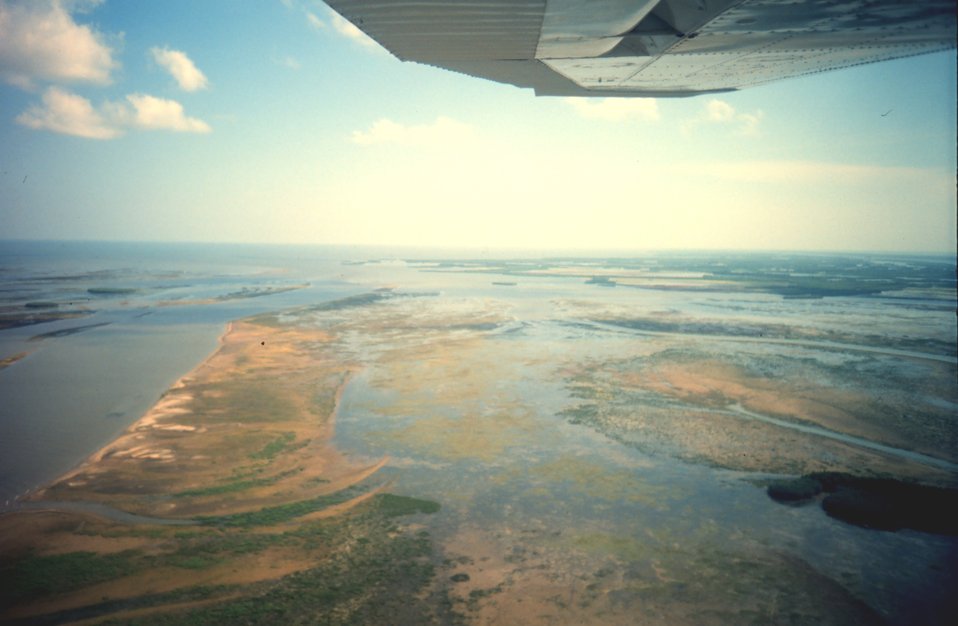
Aerial view of Mississippi Delta wetlands adjacent to Pass a Loutre